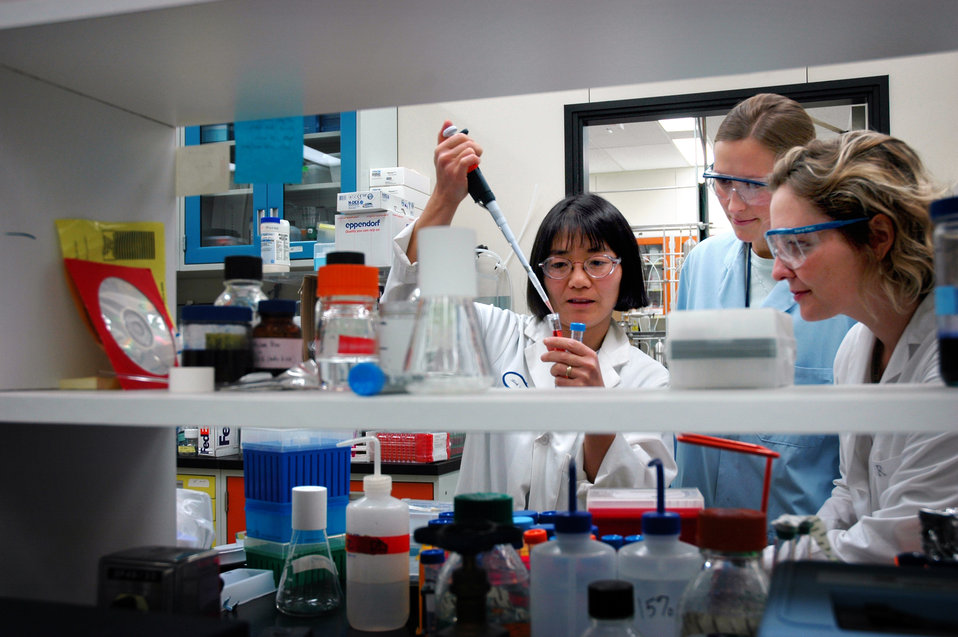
BIOTECHNOLOGY RESEARCH PROGRAMS AT IDAHO NATIONAL LABORATORY.